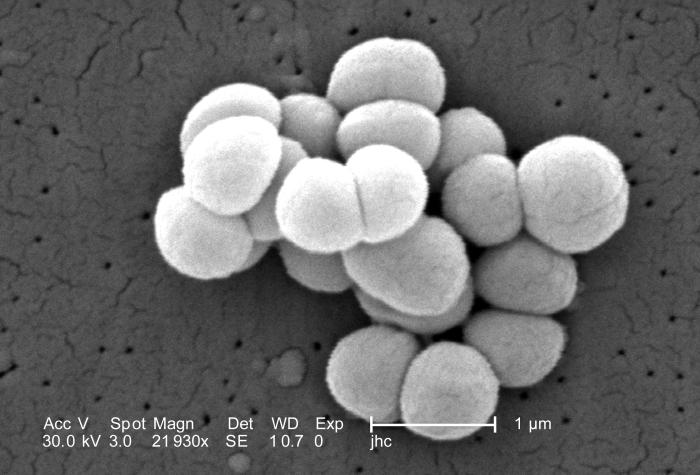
Under a high magnification of 21930x, this scanning electron micrograph (SEM) depicted some of the ultrastructural morphologic features displayed by this group of Gram-positive Micrococcus luteus bacteria. The specimen was obtained from a pure culture that was raised on a polycarbonate filter, for the purpose of identification of the organism.